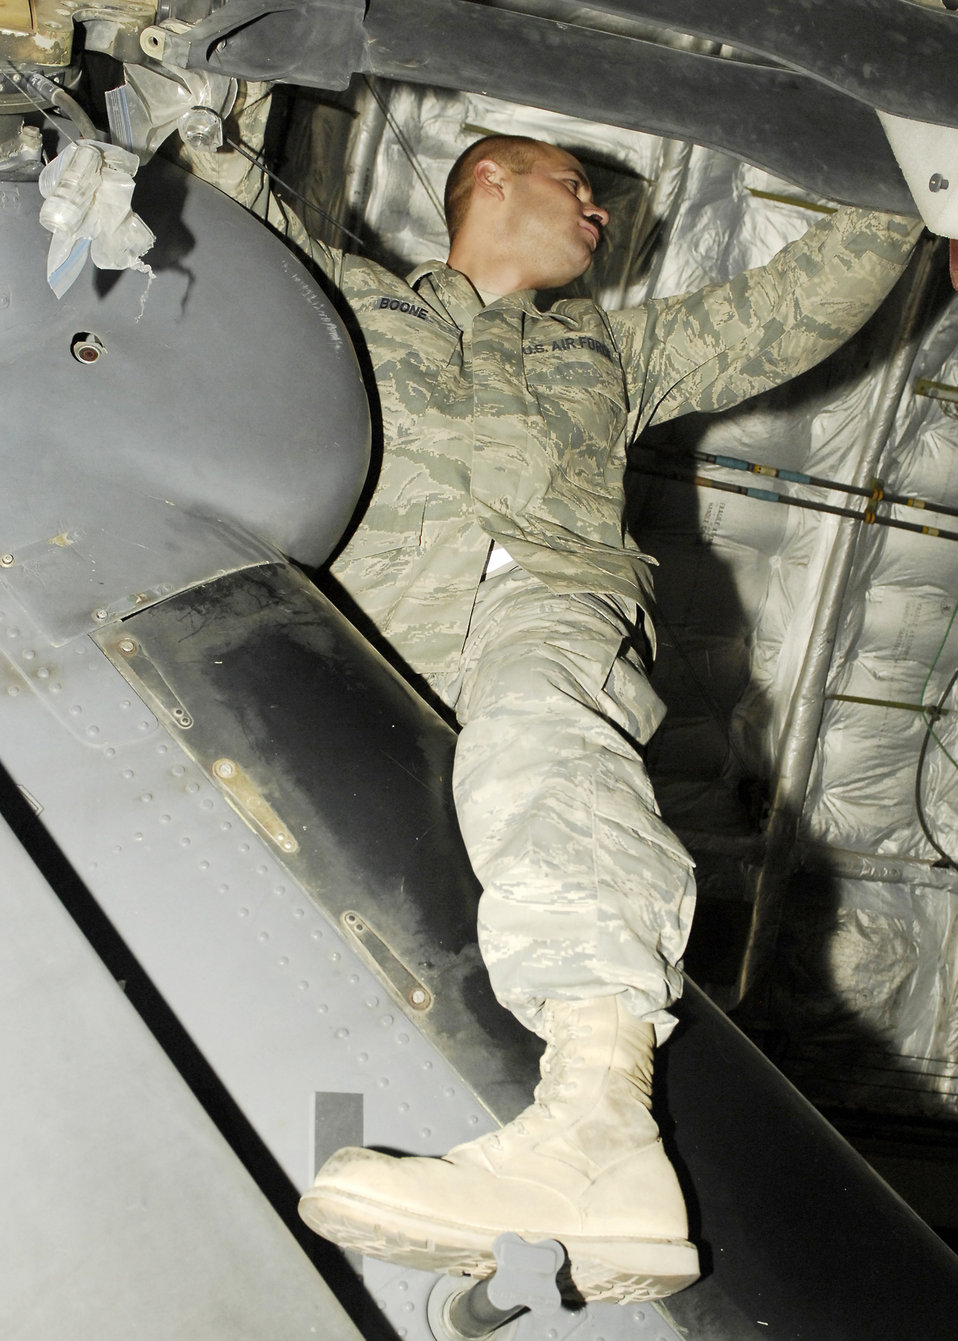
Flying a hawk home

Senior Airman Anthony Boone secures the tail rotors of the HH-60G Pave Hawk to ensure the aircraft doesn't get damaged in transit Sept. 9, 2009, at Bagram Airfield, Afghanistan. The helicopter is being transported on a C-17 Globemaster III back to its home station. Airman Boone is a helicopter crew chief from the 455th Expeditionary Aircraft Maintenance Squadron, and a native of Newport News, Va.